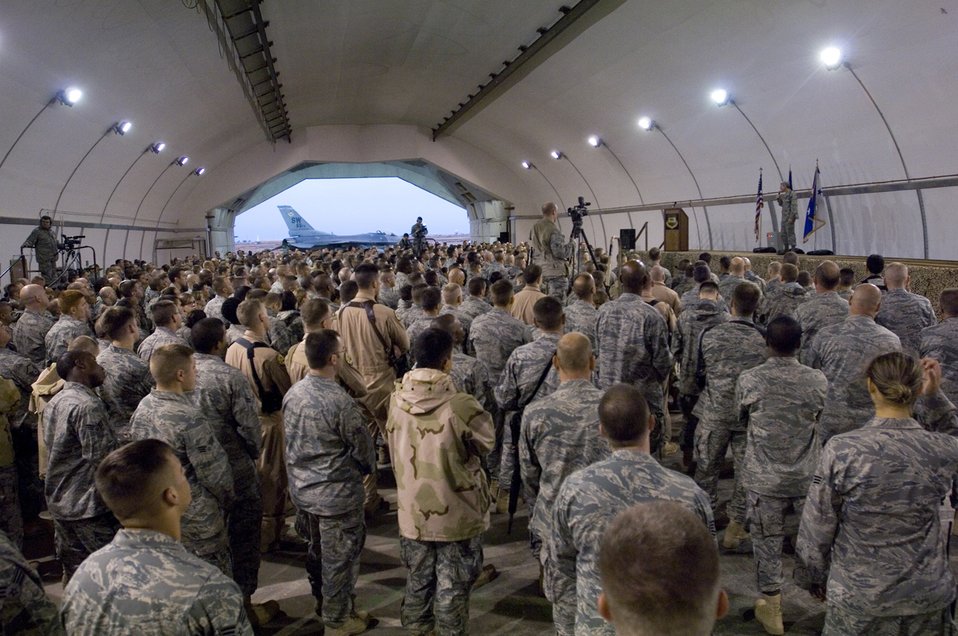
Chief of staff wraps up Middle East tour at Joint Base Balad

Air Force Chief of Staff Gen. Norton Schwartz addresses more than 1,500 Tuskegee Airmen in an aircraft shelter at Joint Base Balad, Iraq, Oct. 25. General Schwartz conducted the Airmen's Call with 332nd Expeditionary Wing Airmen during his first trip to the U.S. Central Command area of responsibility and the Horn of Africa since assuming his position.